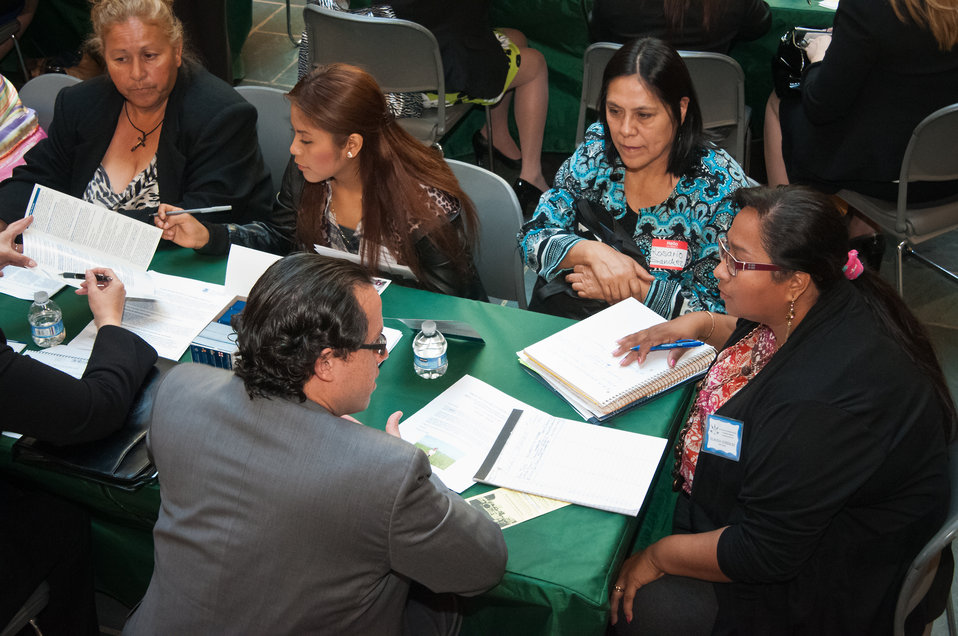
Carlos Munoz, United States Citizenship and Immigration Services (USCIS), assists Rosario Sanchez and Claudia Gonzalez members of Alianza Nacional de Campesinas, an organization of Hispanic Farmworker women at the United States Department of Agriculture (USDA), Office of Advocacy and Outreach Breakfast Networking Reception in Washington, DC, Tuesday, April 9, 2013. The reception allowed the women to network and discuss their issues, priorities and opportunities in rural communities throughout the United States. The women were able to speak to representatives from nine Federal agencies with migrant programs: White House, United States Department of Agriculture (USDA), Department of Health and Human Services (HHS), Housing and Urban Development (HUD), Department of Labor (DOL), Equal Employment Opportunity Commission (EEOC), Department of Education (DOE), Environmental Protection Agency (EPA) and United States Citizenship and Immigration Services (USCIS).